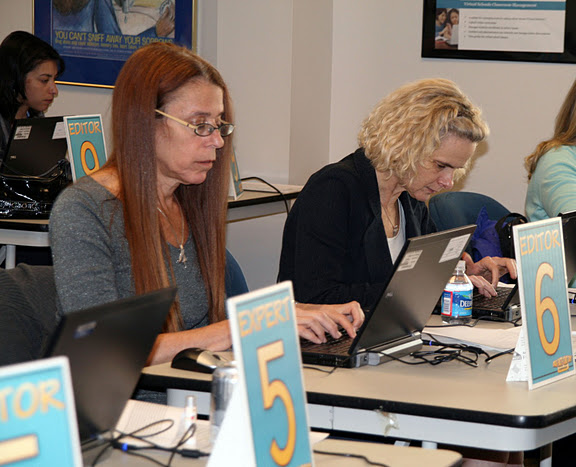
Drug Facts Chat Day

Drs. Nora Volkow and Susan Weiss answering questions on Chat Day 2011